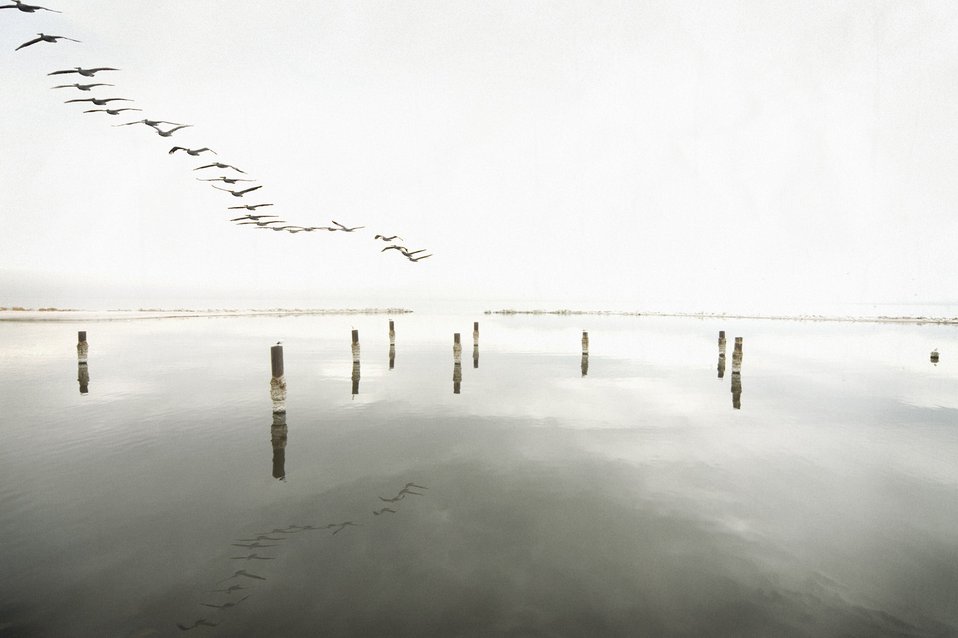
Uploaded by request of Jenna Close

Taken in the Salton Sea, California

The Salton Sea is a refuge for many species of wildlife, especially migratory birds. Recent water level recession and agricultural runoff has caused massive die-offs of fish and foul. The area is beautiful and unique and supports a number of geothermal plants as well.